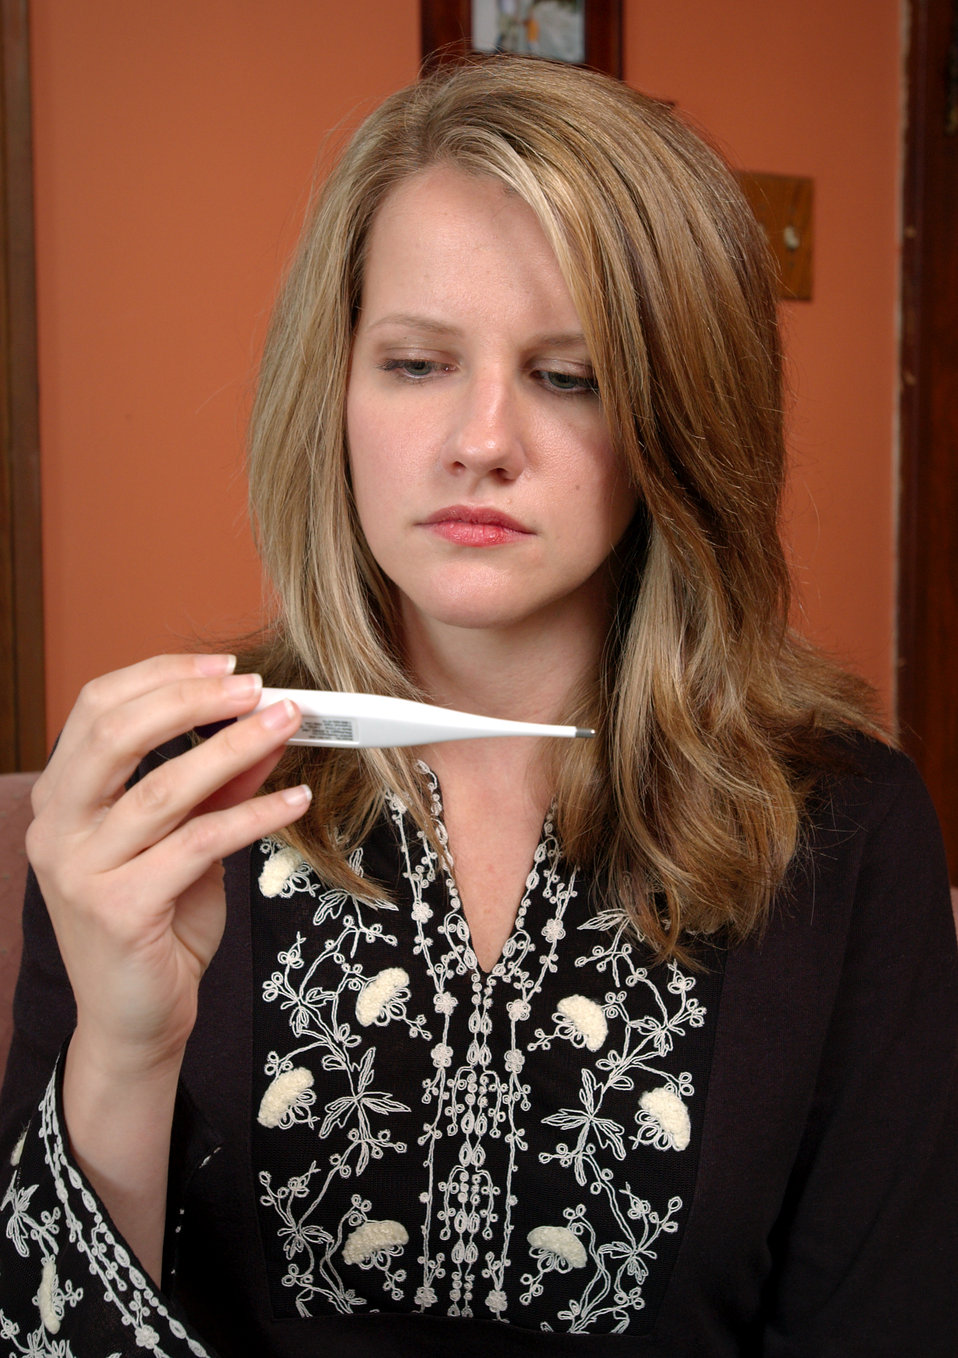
This photograph depicted a woman who was reading a modern, battery-powered oral thermometer, in order to measure her body temperature.